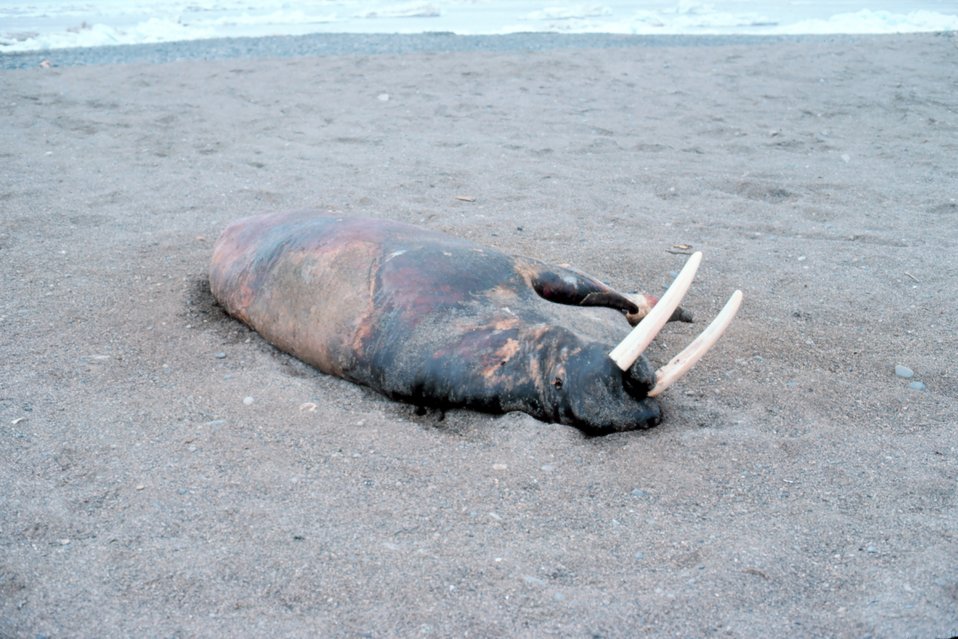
Currents carry many dead things to Punuk Island making it the graveyard of the Bering Sea.